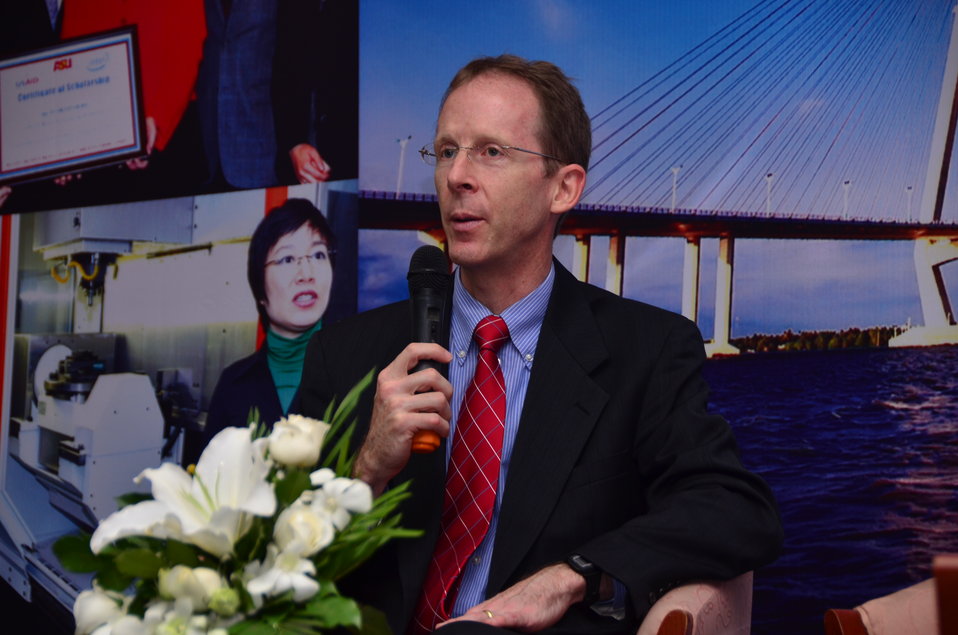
USAID Mission Director Joakim Parker speaks at the HEEAP Conference

March 19, 2013, Can Tho.